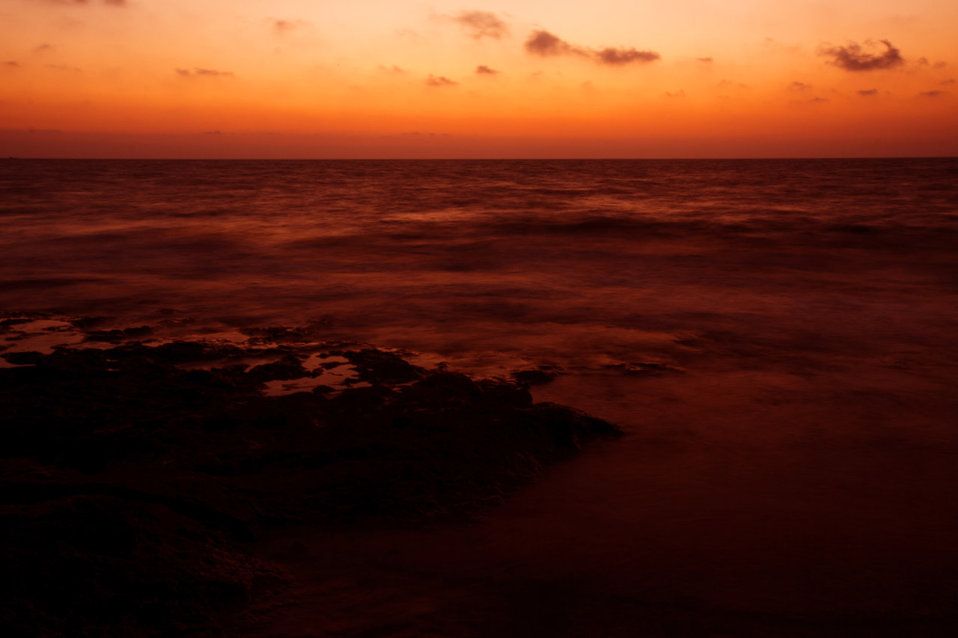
Orange sea sunset

Rocks and waves at orange sunset.